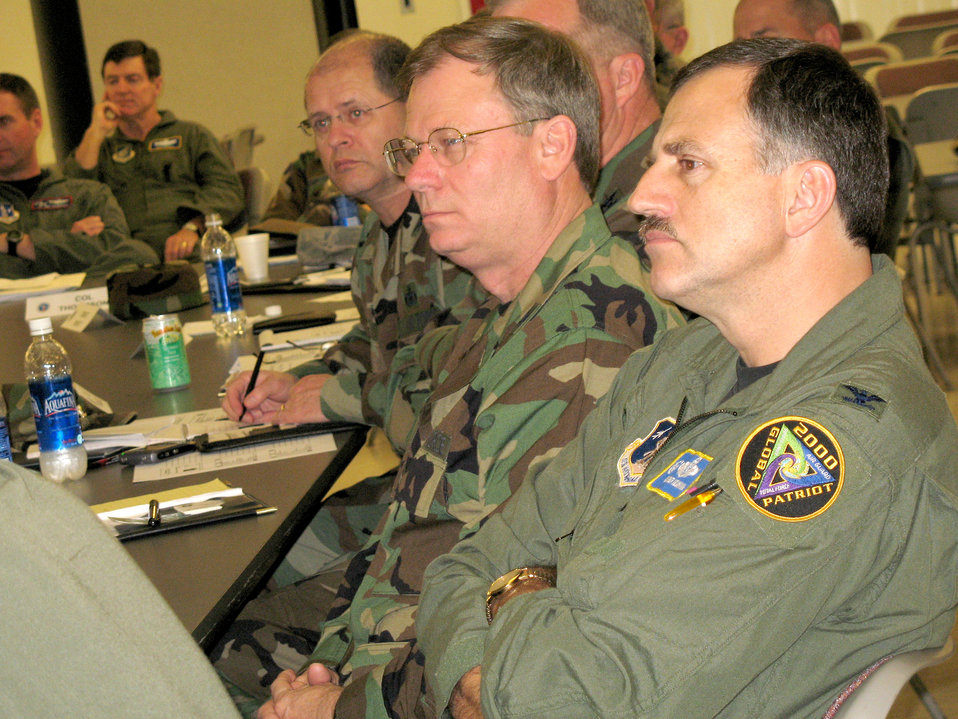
ANG leaders commend Hickam's total force integration

Air National Guardsmen with the Air Directorate Field Advisory Council and the Enlisted Field Advisory Council held their quarterly council meetings at Hickam Air Force Base, Hawaii, Jan. 17. The Hawaii Air National Guard served as host for the conference. The council members discussed issues involving the ANG as a whole and the successful total force integration of the 15th Airlift Wing and Hawaii Air National Guard's 154th Wing C-17 Globemaster III operations and how that integration can be implemented at other locations.